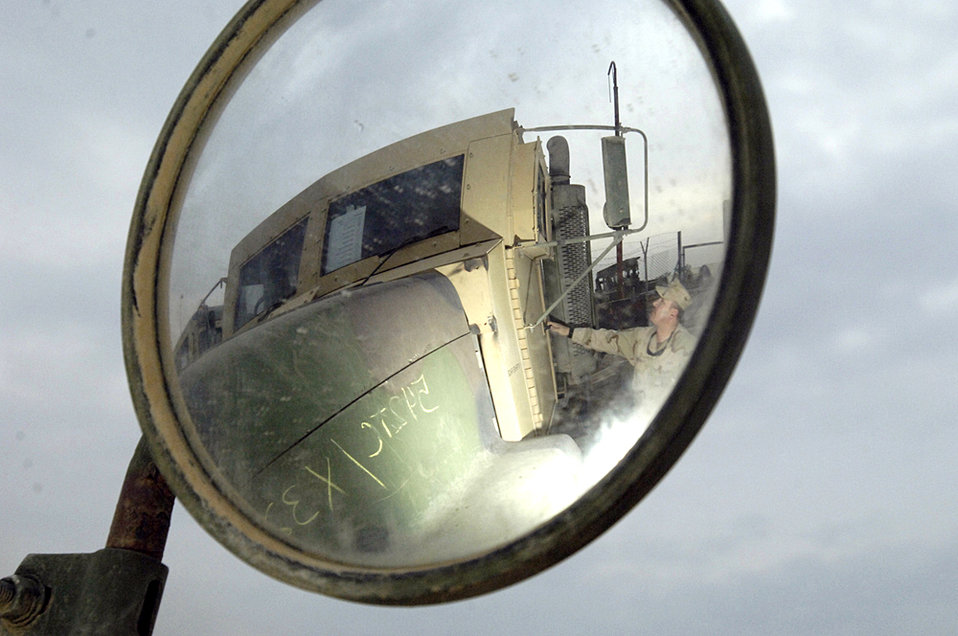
Armor Airmen

BALAD AIR BASE, Iraq (AFPN) -- Master Sgt. Jon Vance inspects an armored truck in the yard at